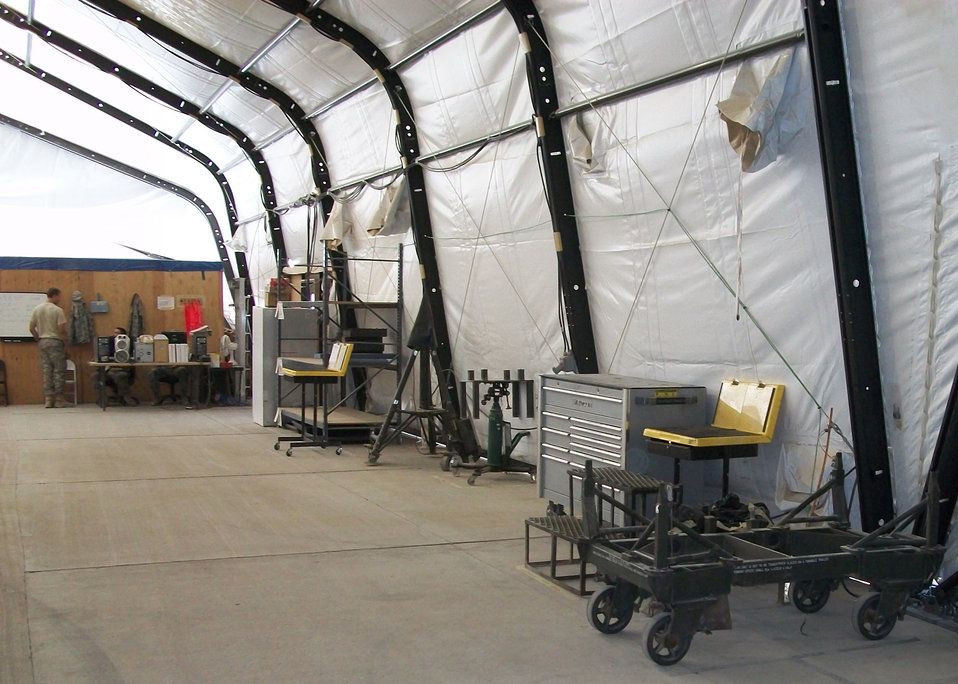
Kandahar Airmen use AFSO 21 at war

The inside of an A-10 Thunderbolt II phase inspection shelter before Airmen applied Air Force Smart Operations for the 21st century Sept. 19, 2009, at Kandahar Airfield, Afghanistan.